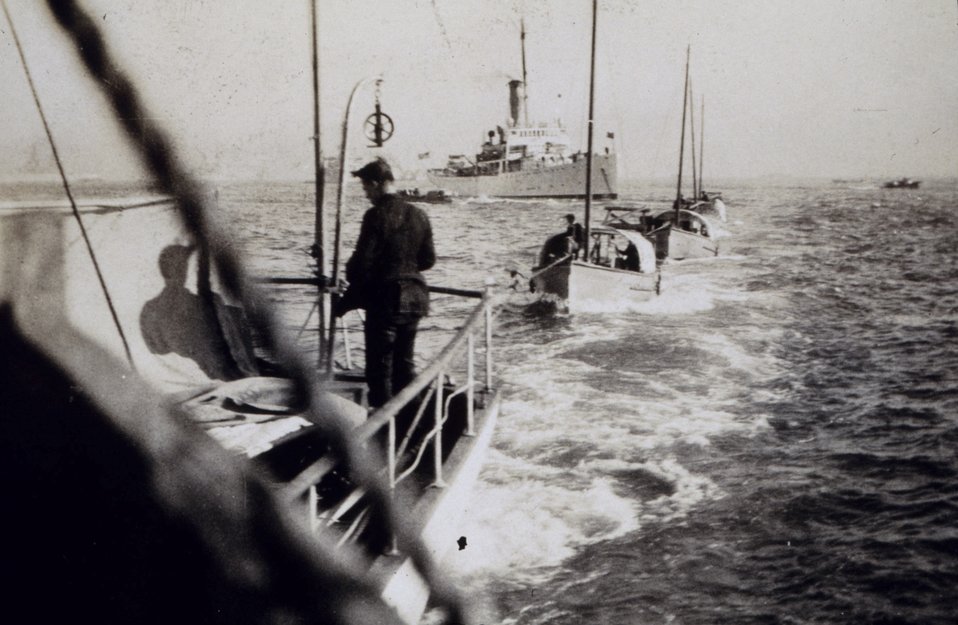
Towing current observation boats to stations - NATOMA in background.